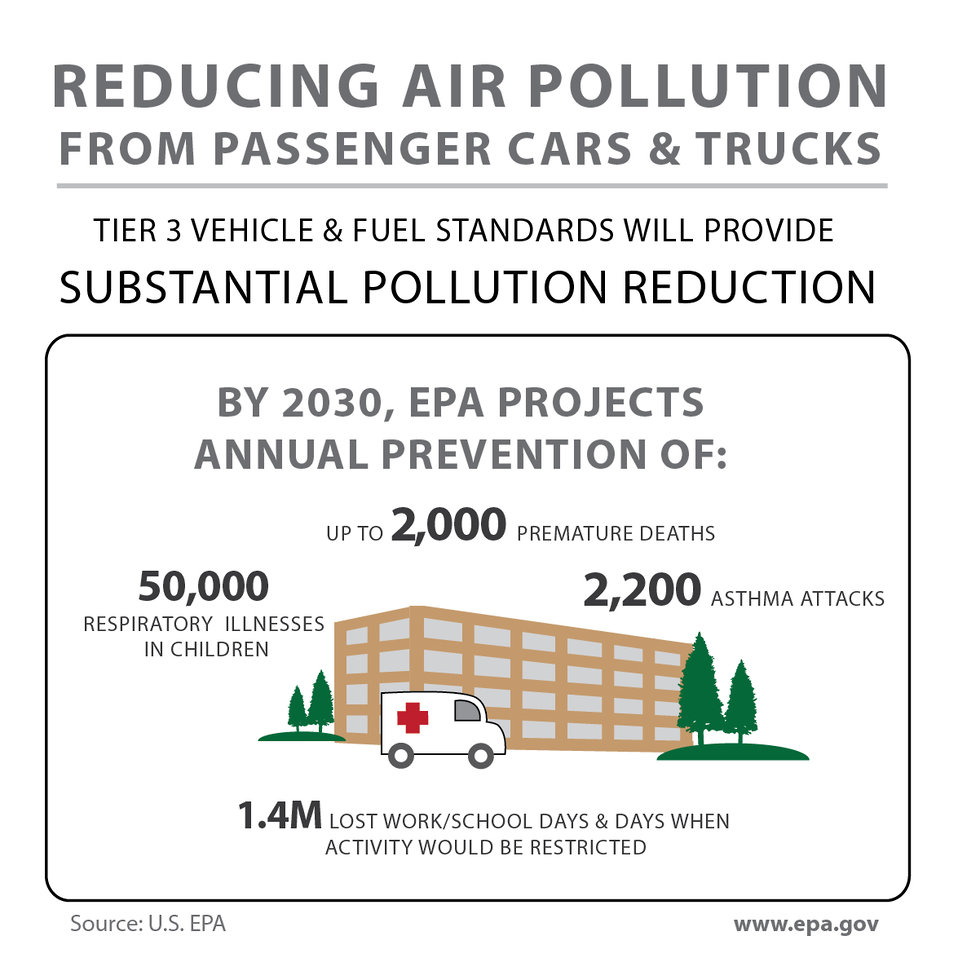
Reducing Air Pollution from Passenger Cars and Trucks

Our new vehicle and fuel standards mean cleaner air. By 2030, we project that annually they will prevent up to 2,000 premature deaths; 50,000 cases of respiratory symptoms in children; and 1.4 million lost school days, work days, and days when air pollution might restrict activities.